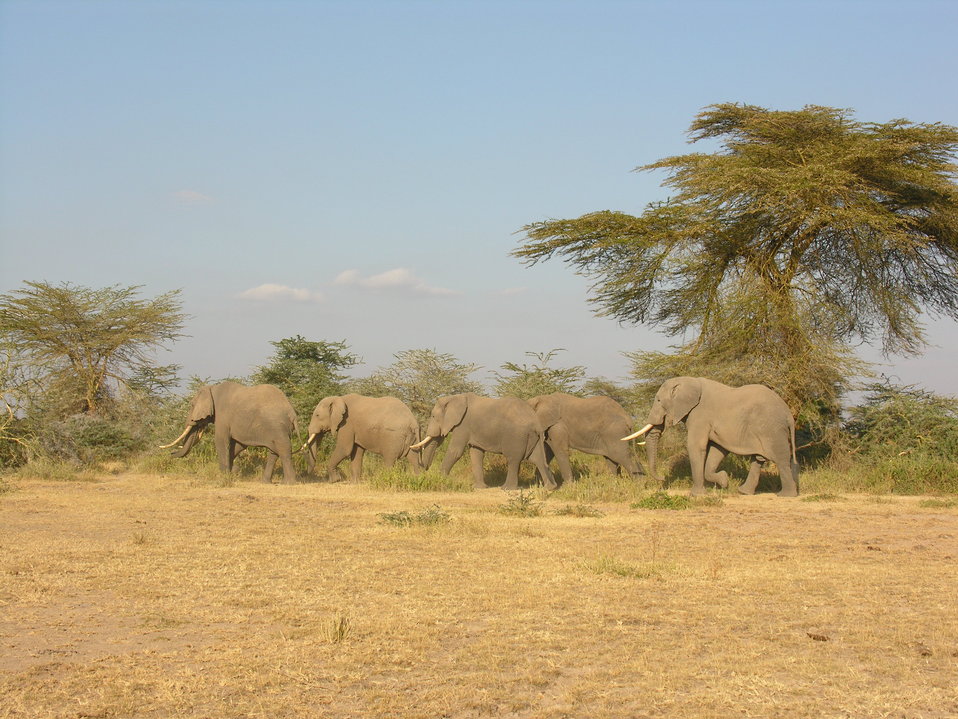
Elephant Study 4

National Parks in Africa are too small for elephants to stay inside year round. Many have to cross farming areas and come into conflict with people.